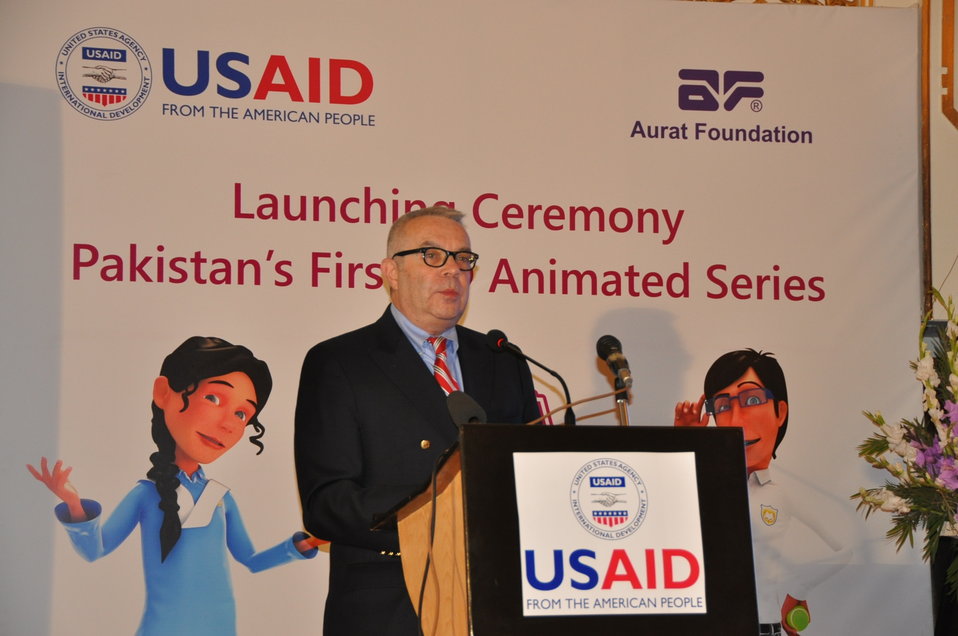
The United States believes that investing in women and girls is one of best ways to achieve economic progress, political stability, and greater prosperity for Pakistani women – and men,” said U.S. Deputy Chief of Mission Ambassador Richard Hoagland sp